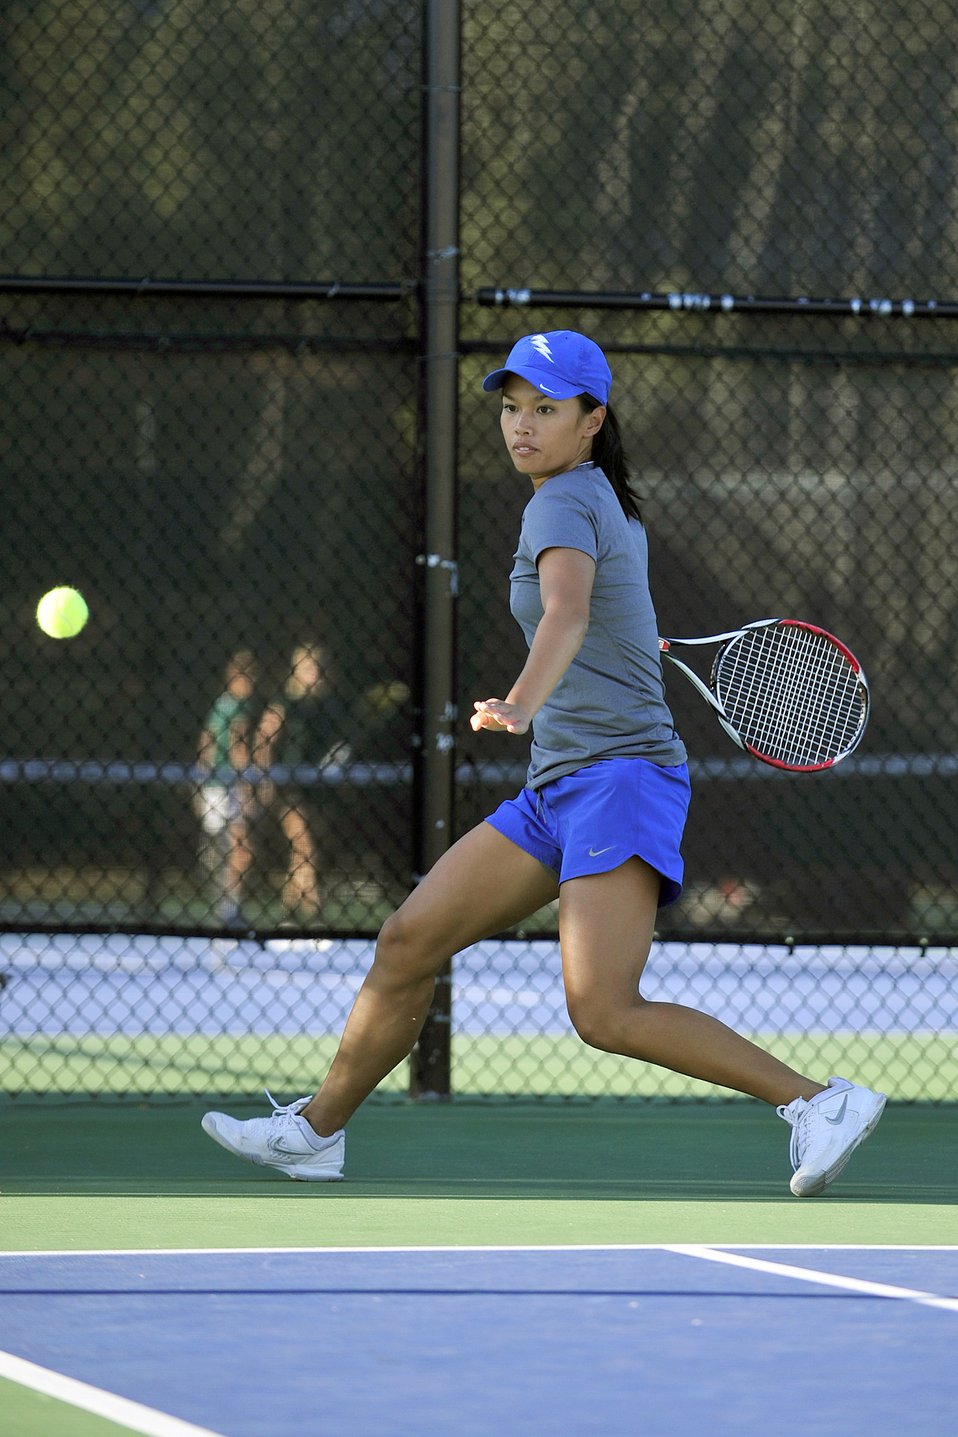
In flight, without wings

Air Force Academy senior Christen Monreal returns the ball in a doubles match against the University of North Carolina-Greensboro during the USAFA Invitational Oct. 3, 2010, at the Academy in Colorado Springs, Colo. Monreal and her doubles partner freshman Anastasia Hueffner lost to opponents Tooli Wikins and Mikayla Rogers, 8-2.